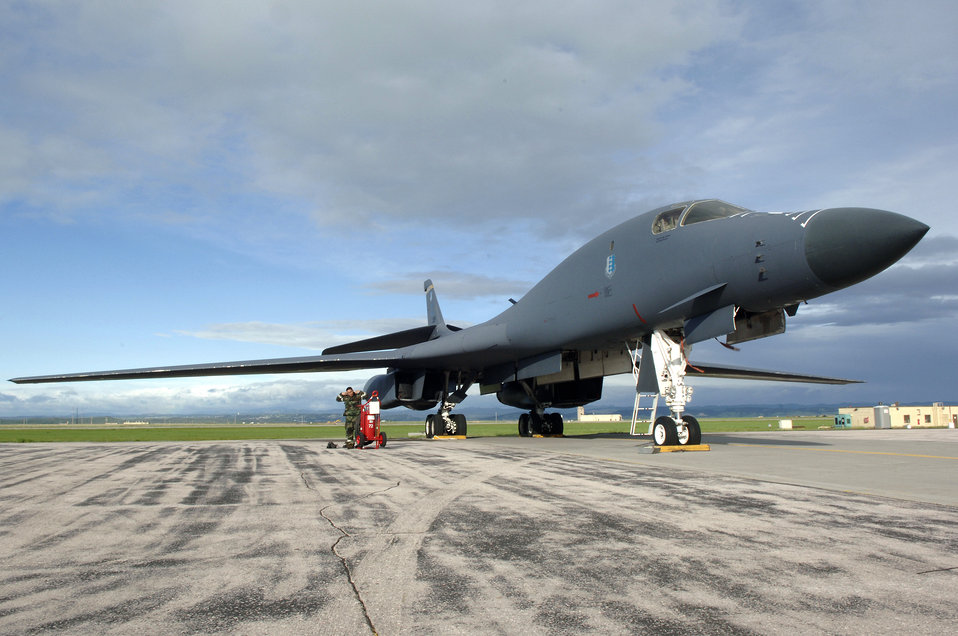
Exercise Badlands Express 06-03

A B-1 Lancer awaits a pre-flight inspection at Ellsworth Air Force Base, S.D., on Tuesday, May 23, 2006. The base is undergoing an exercise named Badlands Express 06-03 in preparation for an operational readiness inspection in July.